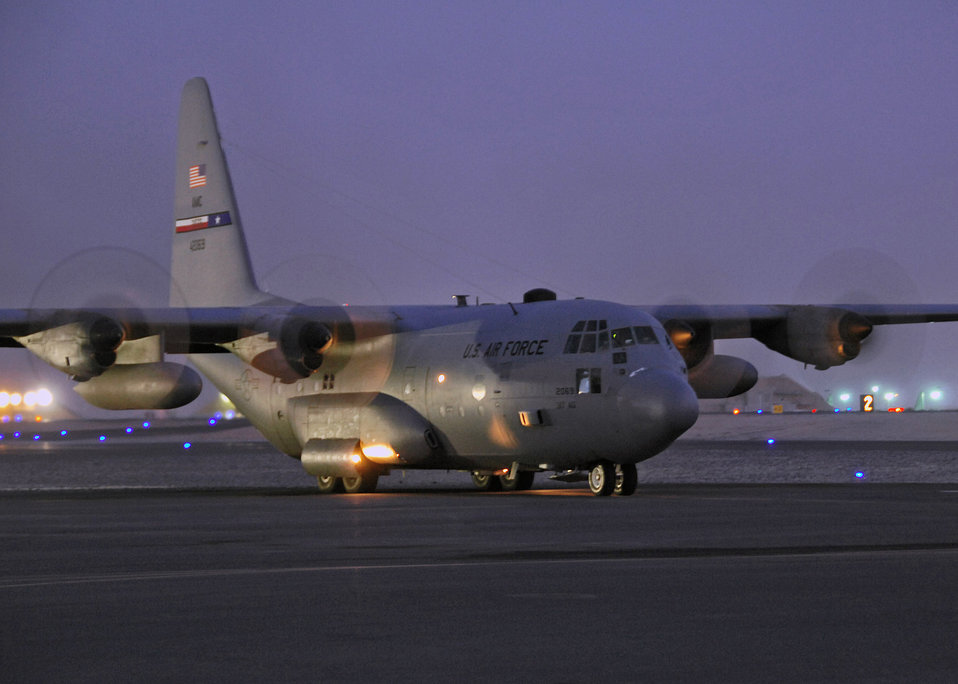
Sept. 10 airpower summary: C-130s provide airlift support

A C-130 Hercules aircraft prepares to depart on a mission in Southwest Asia. The C-130s provide intra-theater heavy airlift, delivering tons of cargo and transporting passengers to include troop resupply in support of Operations Iraqi and Enduring Freedom.